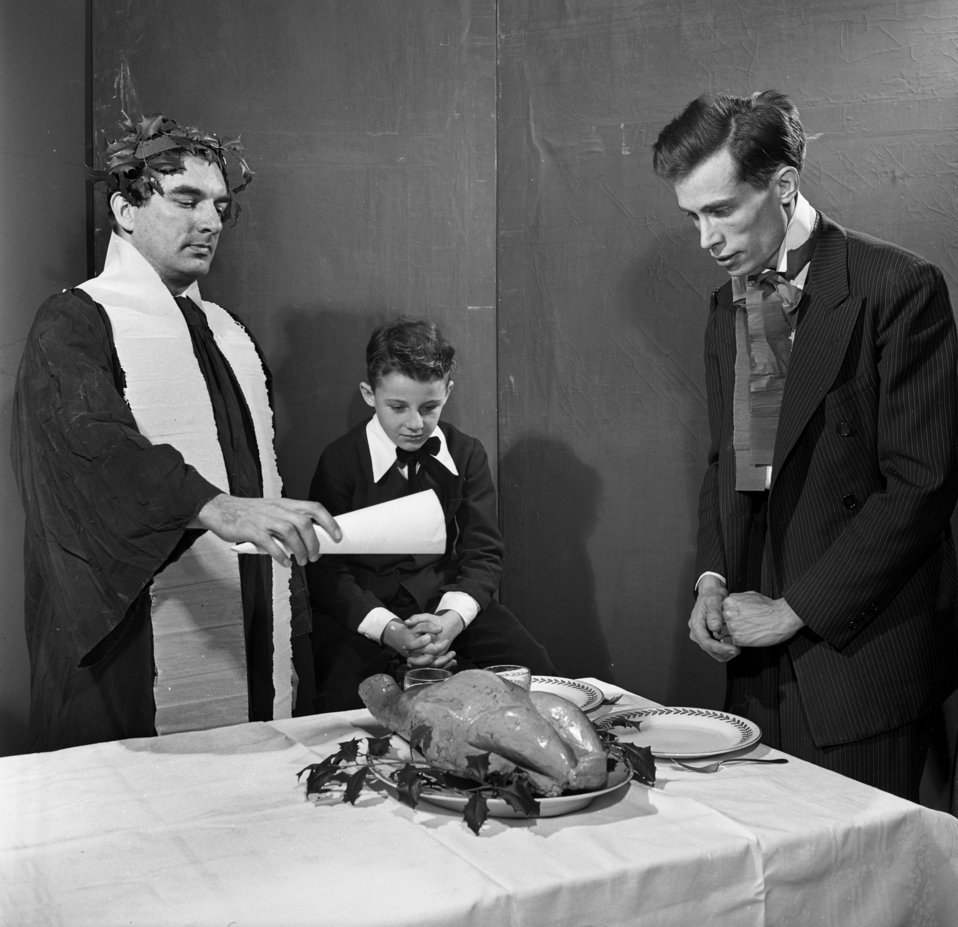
Community Playhouse 'Christmas Carol' Oak Ridge 1947

4067-g DOE photo Ed Westcott 12-5-1947 Oak Ridge Tennessee